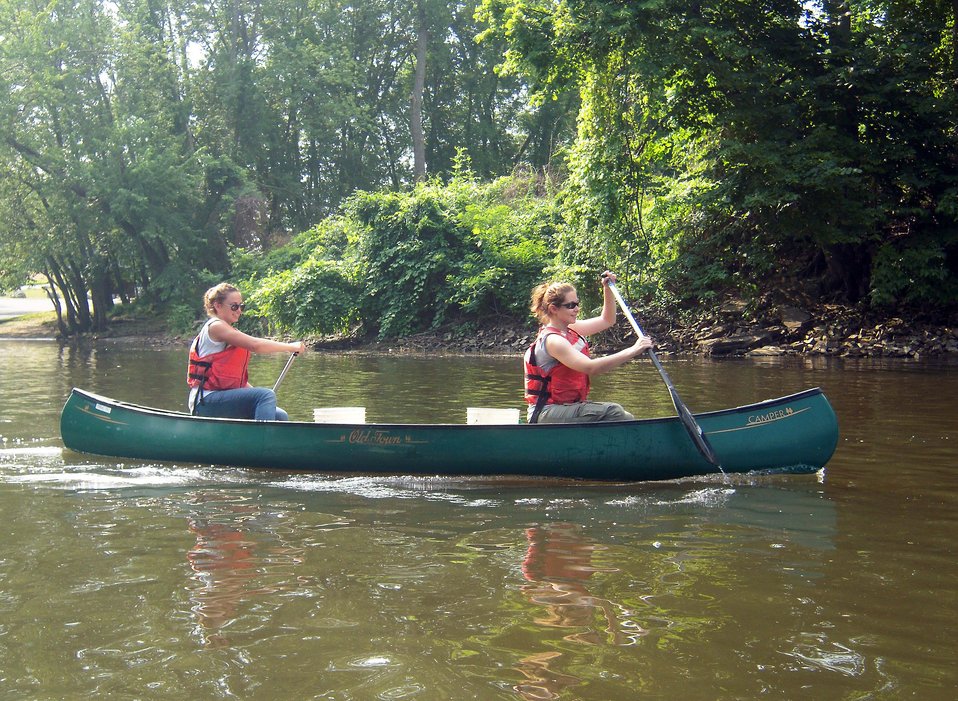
YCC crew removing water chestnut